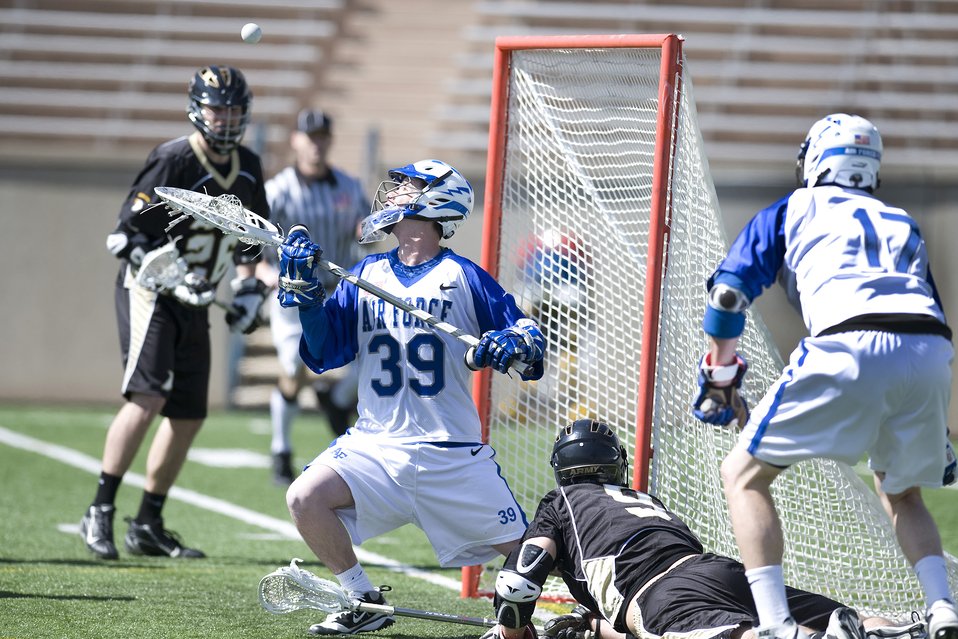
Lacrosse: Falcons defeat Black Knights

Falcon junior goalkeeper Brian Wilson makes one of his seven saves against Army during the Falcons 8-7 overtime lacrosse game victory at the U.S. Air Force Academy's Falcon Stadium in Colorado, March 13, 2010. The Falcons defeated the Black Knights 8-7 in overtime.